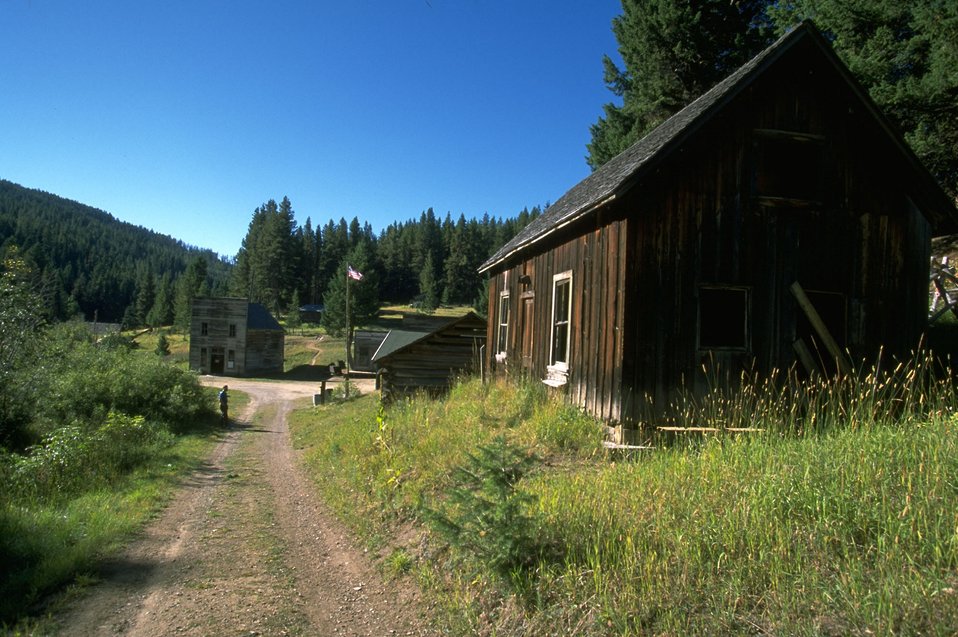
Downtown Garnet from Dublin Gultch